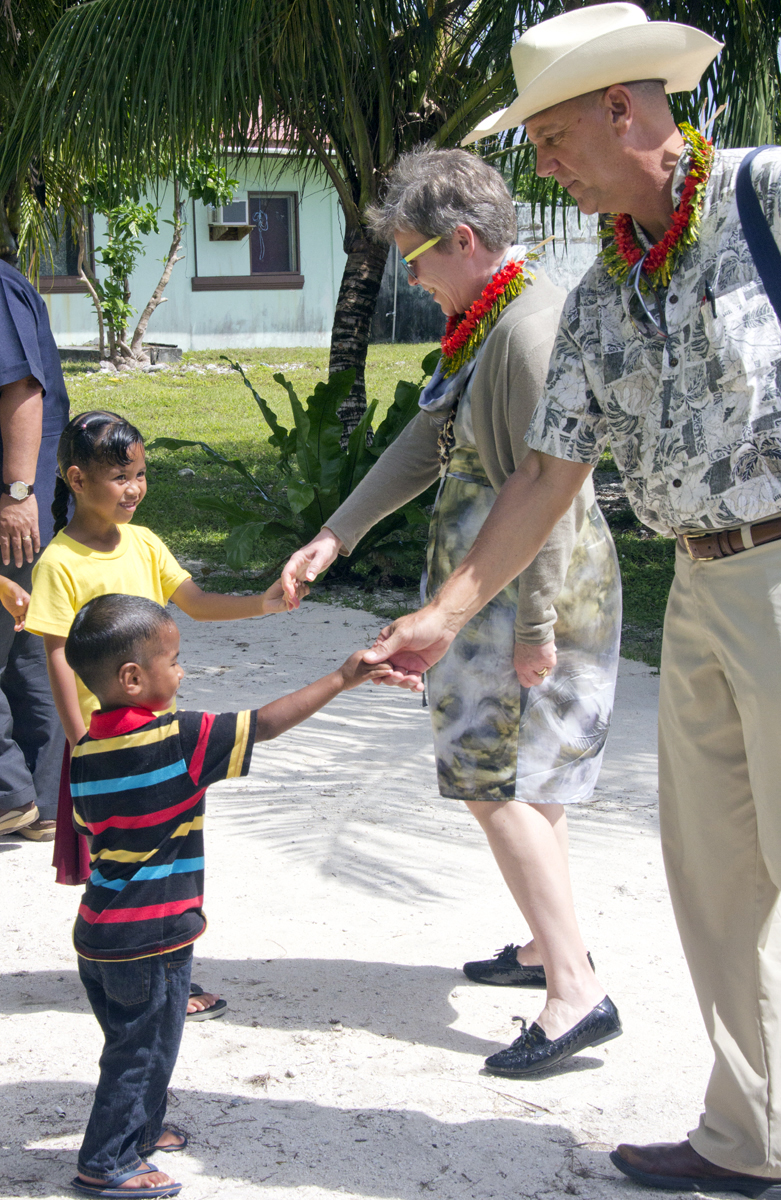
Under Secretary Gottemoeller and Ambassador Armbruster Greet Children on Kili Island

Under Secretary of State for Arms Control and International Security Rose Gottemoeller and U.S. Ambassador to the Marshall Islands Tom Armbruster greet children on Kili Island on March 3, 2014. Under Secretary Gottemoeller and Ambassador Armbruster participated in Remembrance Day ceremonies commemorating those affected by the 'Bravo Shot,' which occurred on March 1, 1964, and the 66 other nuclear tests in the Marshall Islands from 1946-1958.